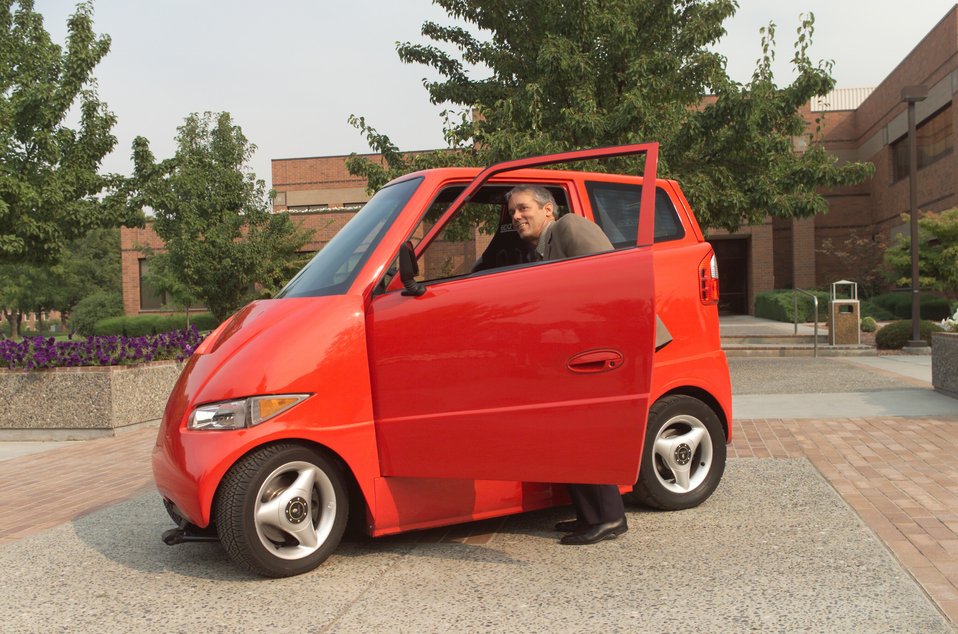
Woodbury's Spokane company, Commuter Car Corporation, received free technology assistance from Pacific Northwest National Laboratory when PNNL assessed the Tango's impact on freeway capacity in Seattle-area traffic. Woodbury brought the Tango to the Tri-Cities for a visit in 2003 increase the car's visibility southwestern Washington State.